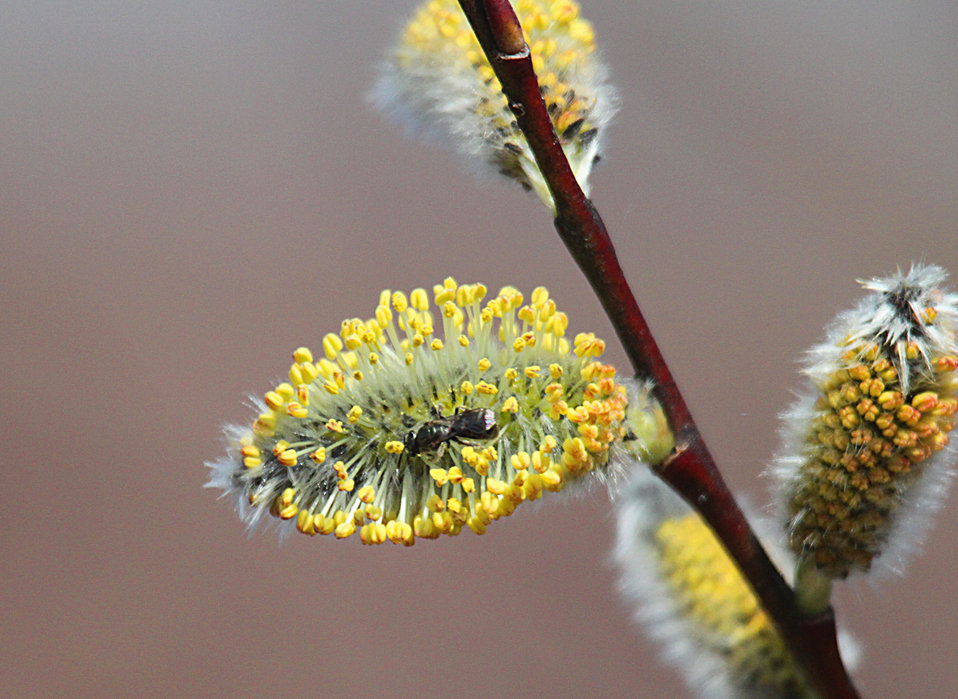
spring willow in bloom

Willow
Photo credit: Ken Sturm; USFWS